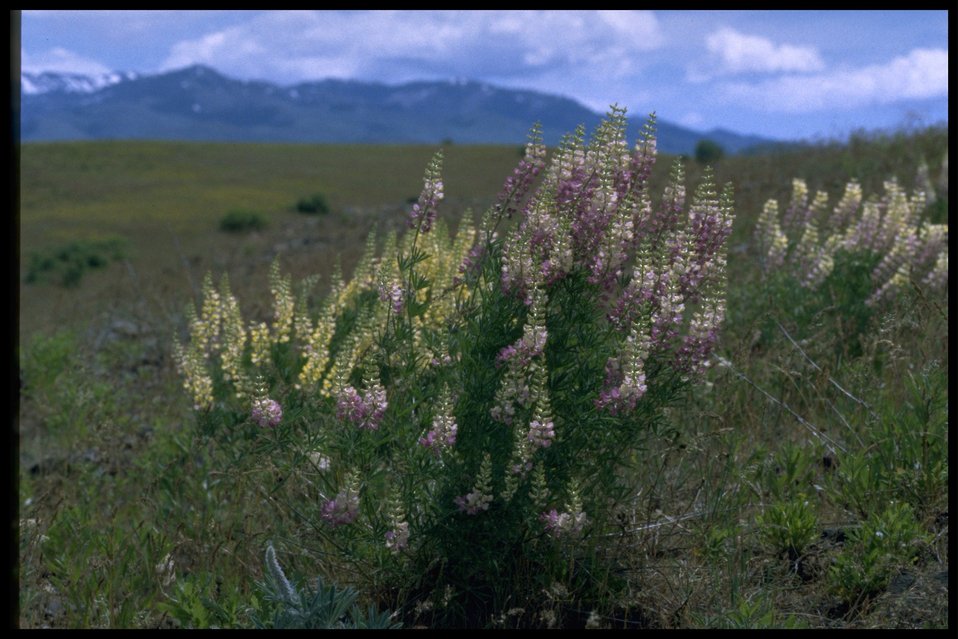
Farshot of Bigleaf Lupine, color variation.